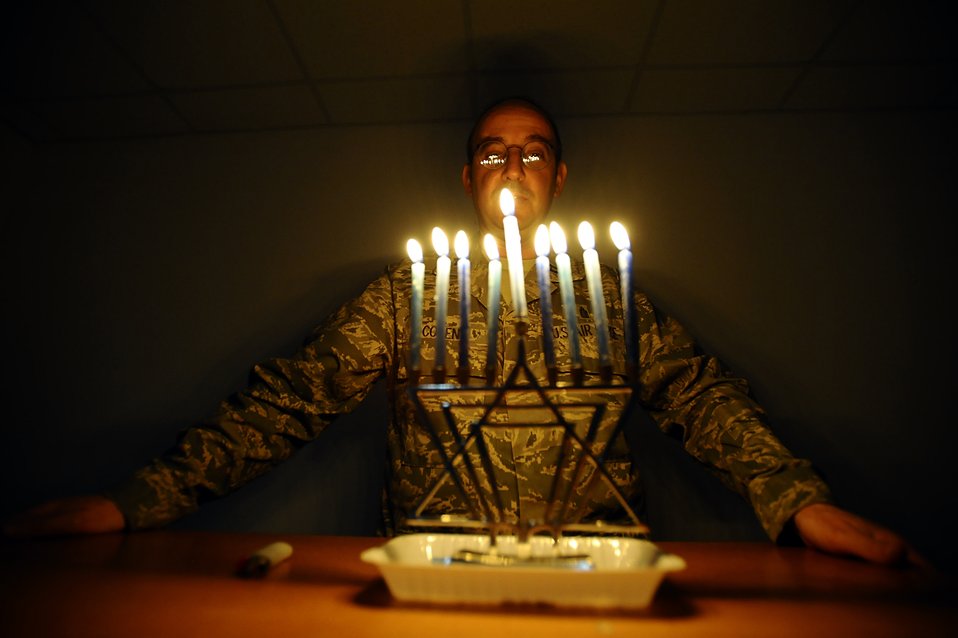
Many faiths, many holidays

Chaplain (Capt.) Andrew Cohen stands behind a lit menorah during the eighth day of Hanukkah at Joint Base Balad, Iraq. Chaplain Cohen, a rabbi with the 332nd Air Expeditionary Wing chapel, is deployed from Andrews Air Force Base, Md.